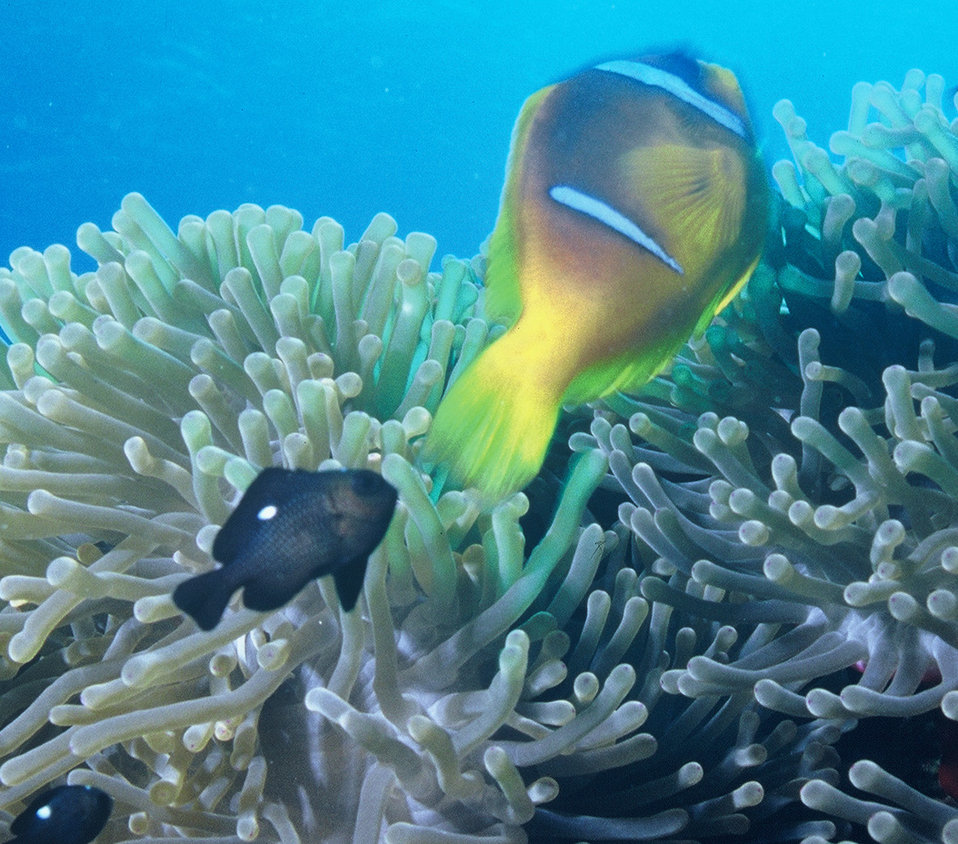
Dascyllus en anemoonvis (Dascyllus trimaculatus)